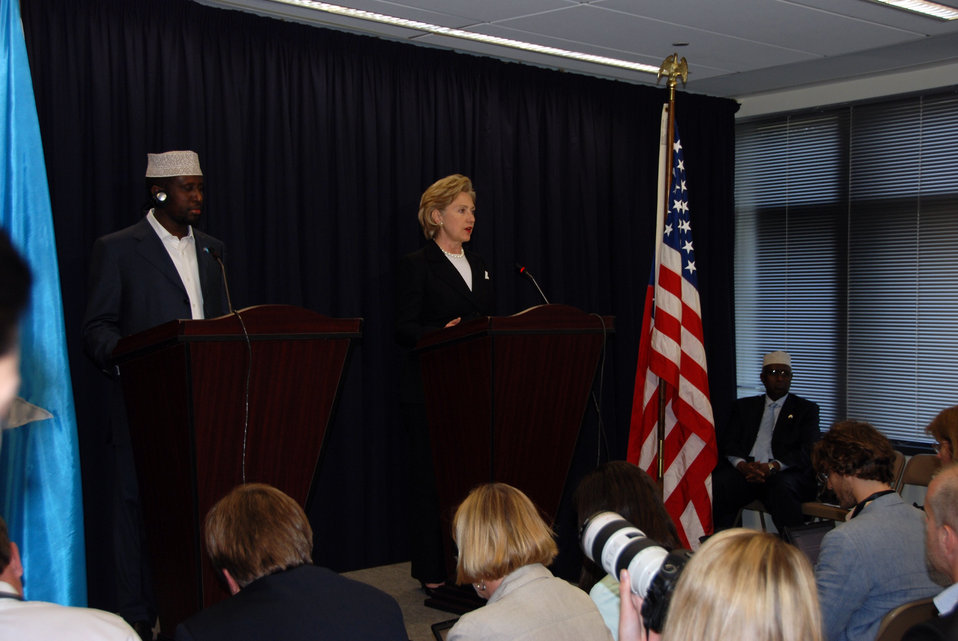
Secretary Clinton and Somali President Press Conference

U.S. Secretary of State Hillary Rodham Clinton participates in a press conference with the Somali President Sheikh Sharif Ahmed in Nairobi, Kenya August 6, 2009.